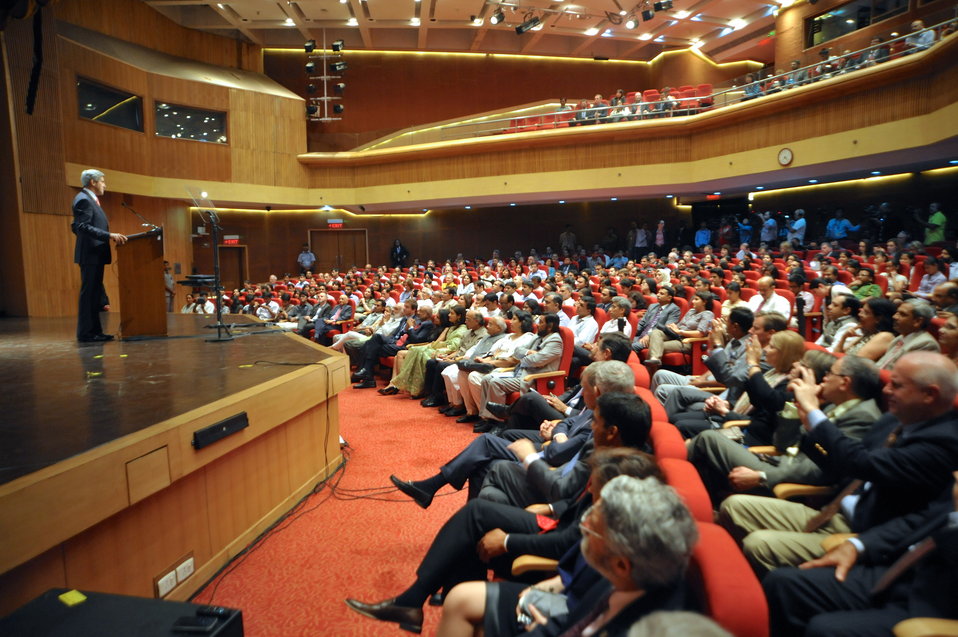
Secretary Kerry Delivers Remarks on U.S.-India Relations

U.S. Secretary of State John Kerry delivers remarks on U.S.-India relations in New Delhi, India on June 23, 2013.